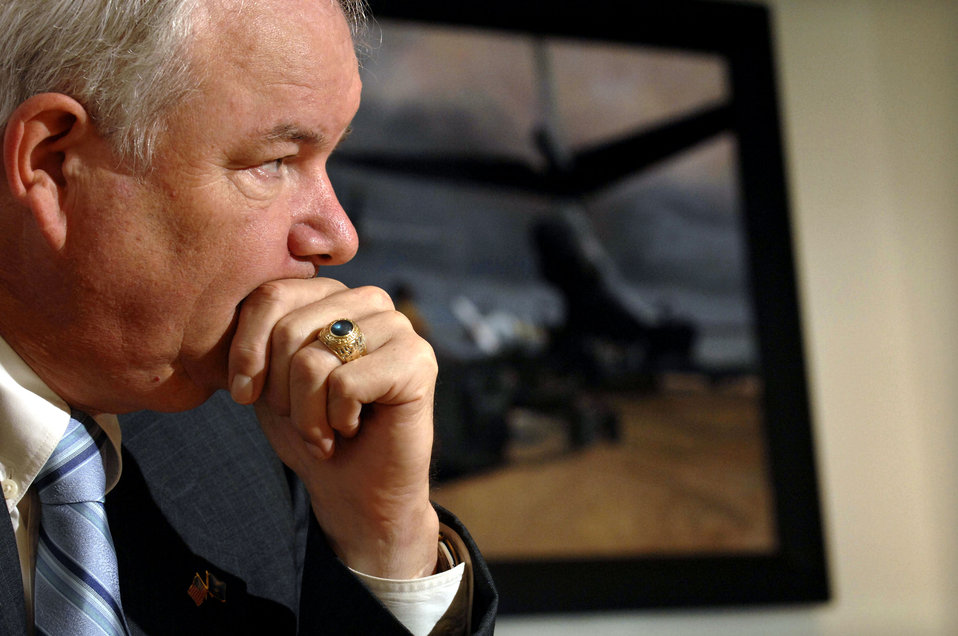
Secretary Wynne talks about service on Air Force birthday

Secretary of the Air Force Michael W. Wynne ponders before answering a question from Defense News editor Vago Muradian during an interview at the Pentagon on Sept. 18. While Airmen around the globe went to work on the Air Force birthday, the secretary discussed recapitalization, the Joint Strike Fighter, allied forces serving as wingmen and other topics.